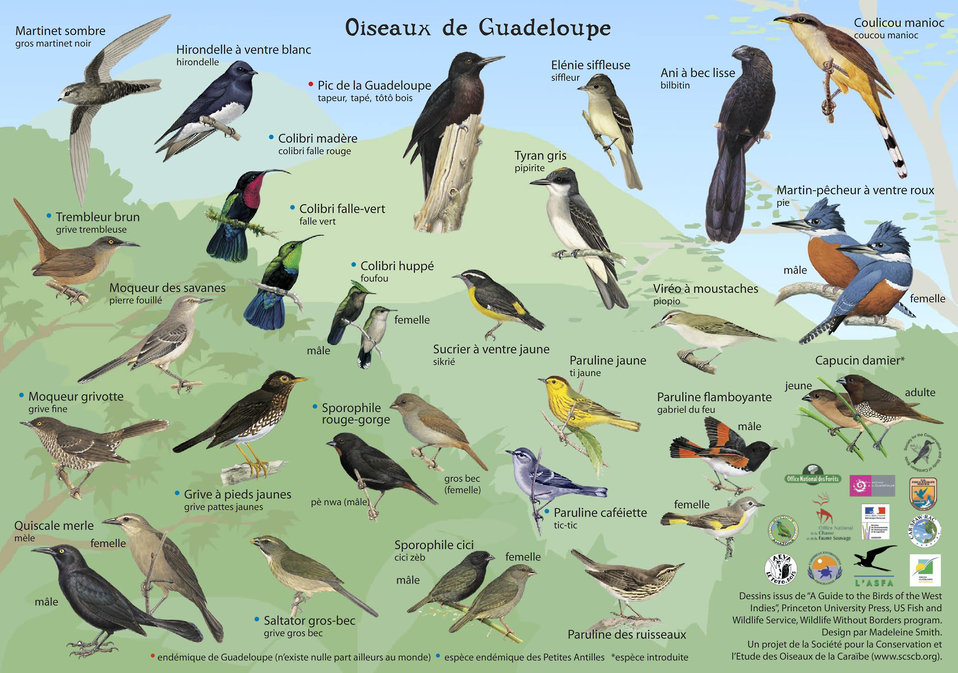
Identification guide for Birds of Guadeloupe.